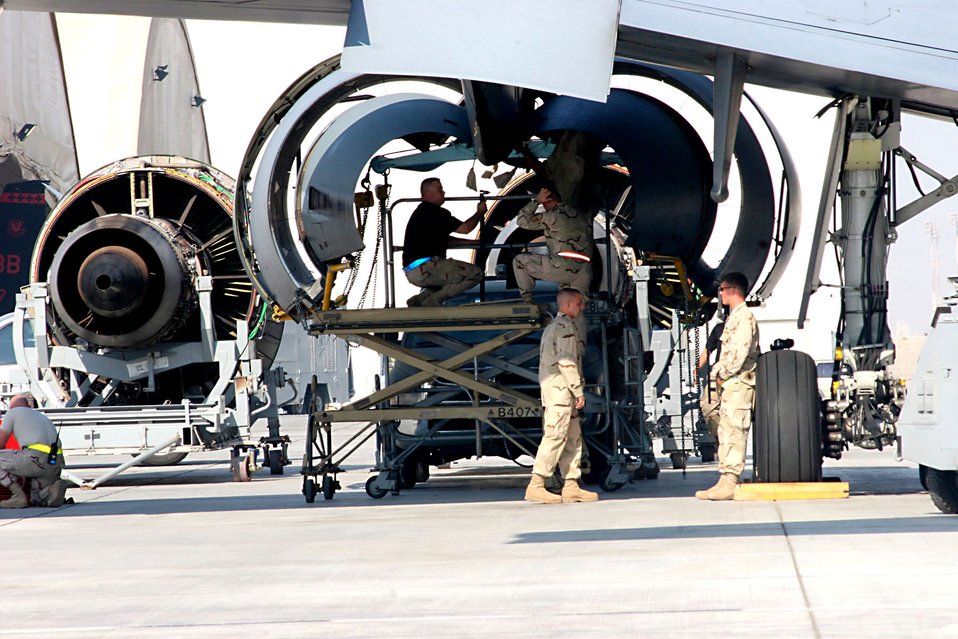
Desert KC-10 Engine Change

Maintainers from the 380th Expeditionary Aircraft Maintenance Squadron at an air base in Southwest Asia inspect the engine nacelle cowling of a KC-10 Extender Nov. 23 after removing a damaged engine.